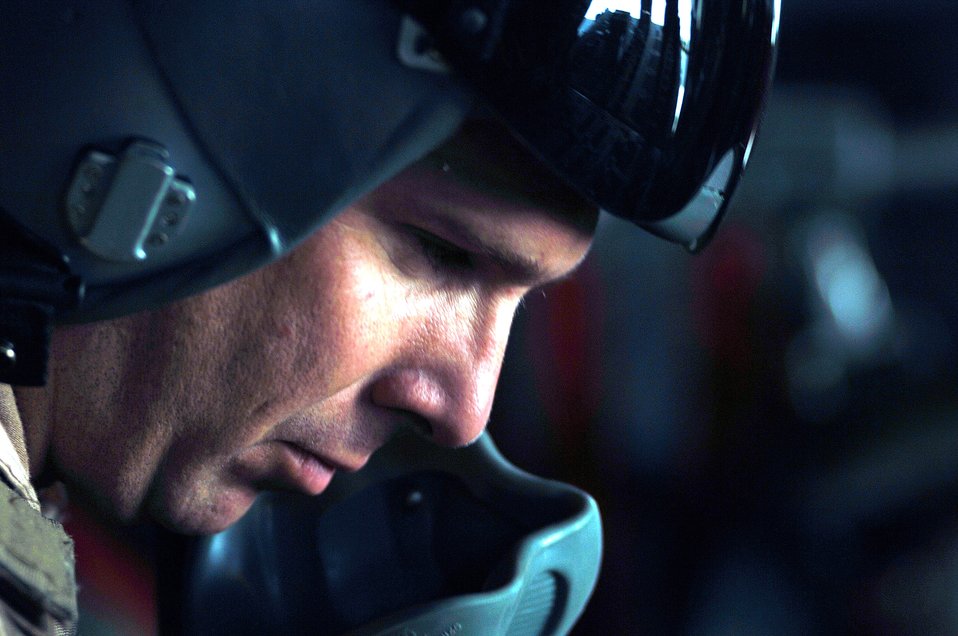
Leaflet airdrop mission delivers clear message to Taliban

Technical Sgt. Aaron Fletcher, C-130 Hercules loadmaster, concentrates on preparations to drop 30,000 warning leaflets March 6 over the southeastern mountains of Afghanistan. The leaflets were used to communicate with Taliban extremists, warning them not to interfere with coalition activities. The leaflet airdrop mission is contributing to Operation Achilles, launched March 6 by International Security Assistance Force.